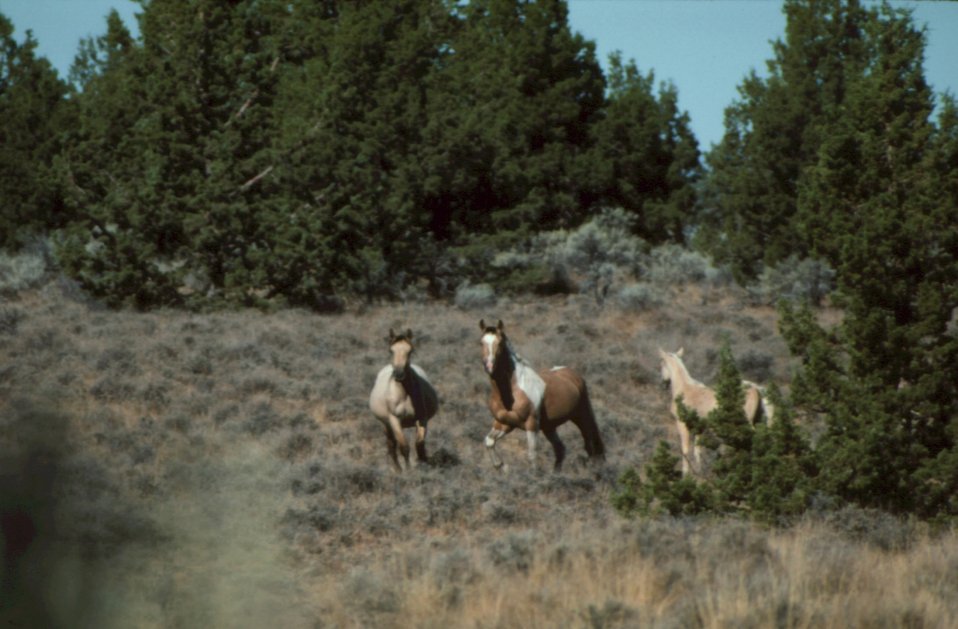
South Steens Wild Horse Management Heard Area.